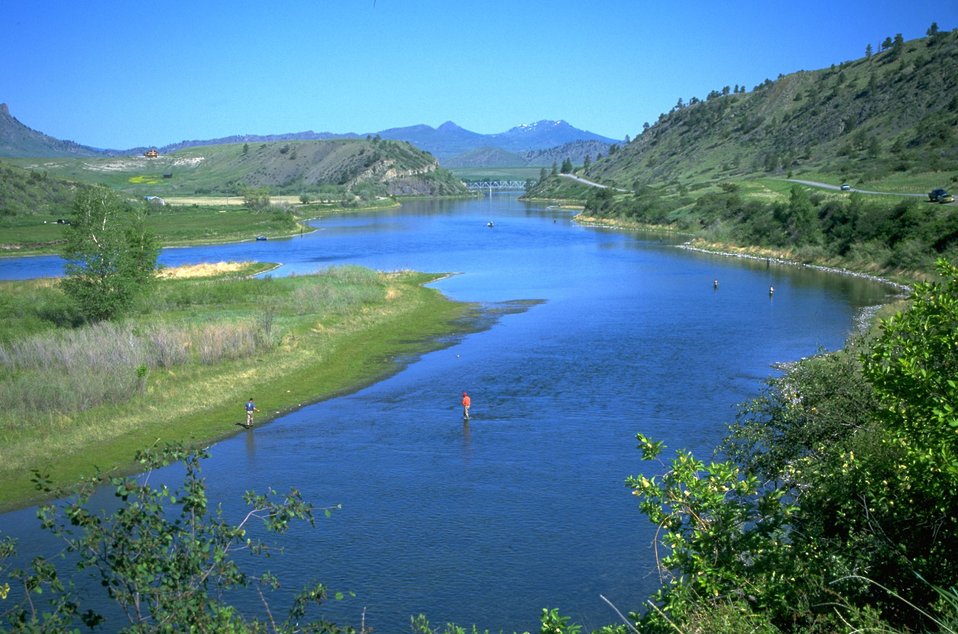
Fishing in the Missouri River